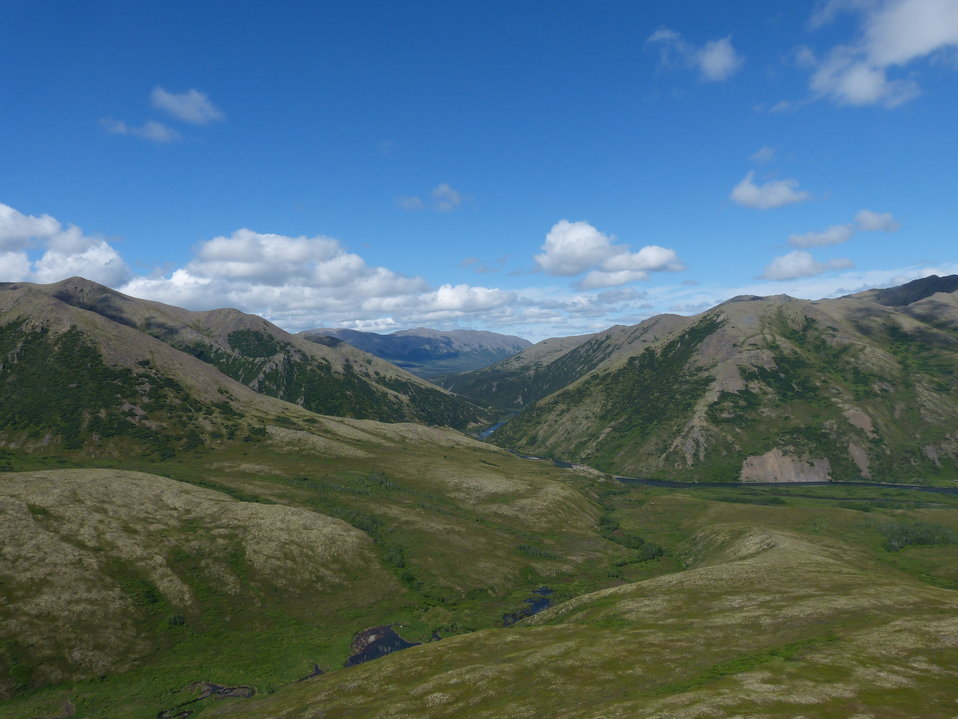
Kilbuck Mountains, Yukon Delta National Wildlife Refuge

Photo by: Kristine Sowl,
USFWS, Yukon Delta NWR, July 10, 2013